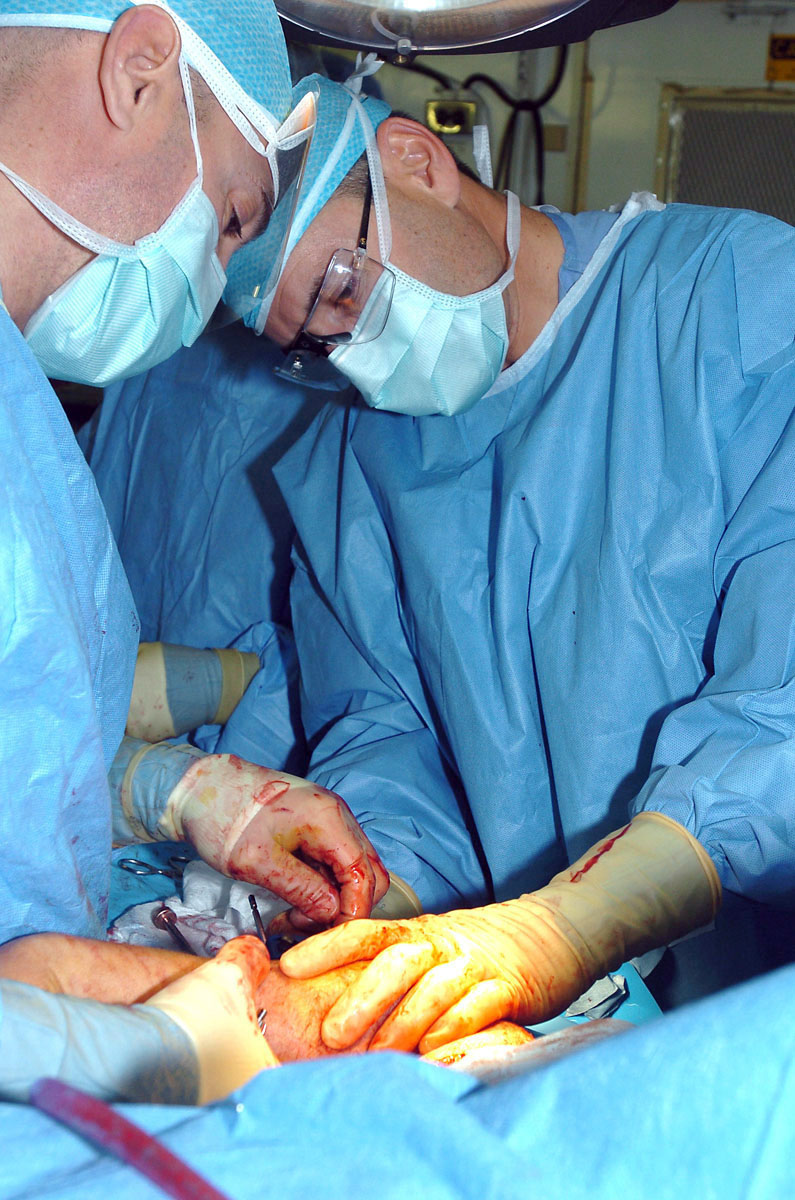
Theater hospital

BALAD AIR BASE, Iraq (AFPN) -- Colonels (Dr.) Elisha Powell and (Dr.) Jack Ingari operate on a Soldier from the 101st Airborne Division after an improvised explosive device attack injured him. Both are orthopedic surgeons with the 332nd Expeditionary Medical Group at the Air Force theater hospital which treats American and Iraqi forces, and Iraqi citizens.